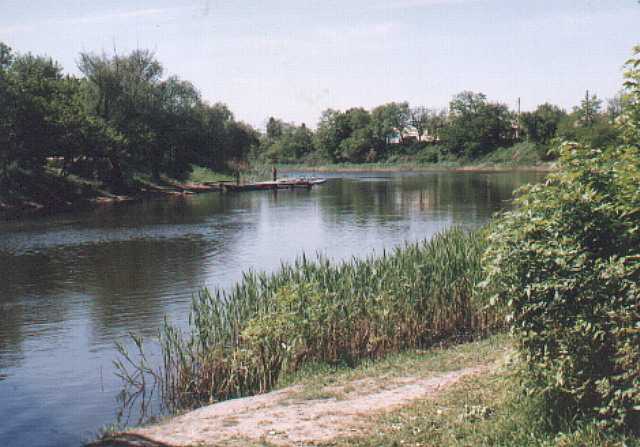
Català: El Vovtxa prop de Pavlohrad, a l'óblast veí de Dnipropetrovsk. El Vovtxa prop de Pavlohrad. Українська: річка Вовча